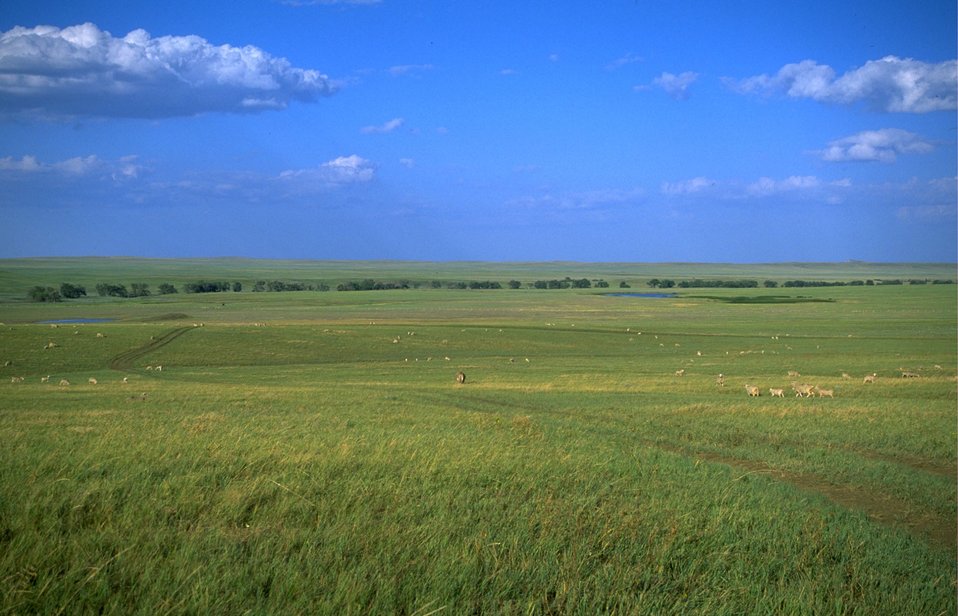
Grassland with Moreau River in the background